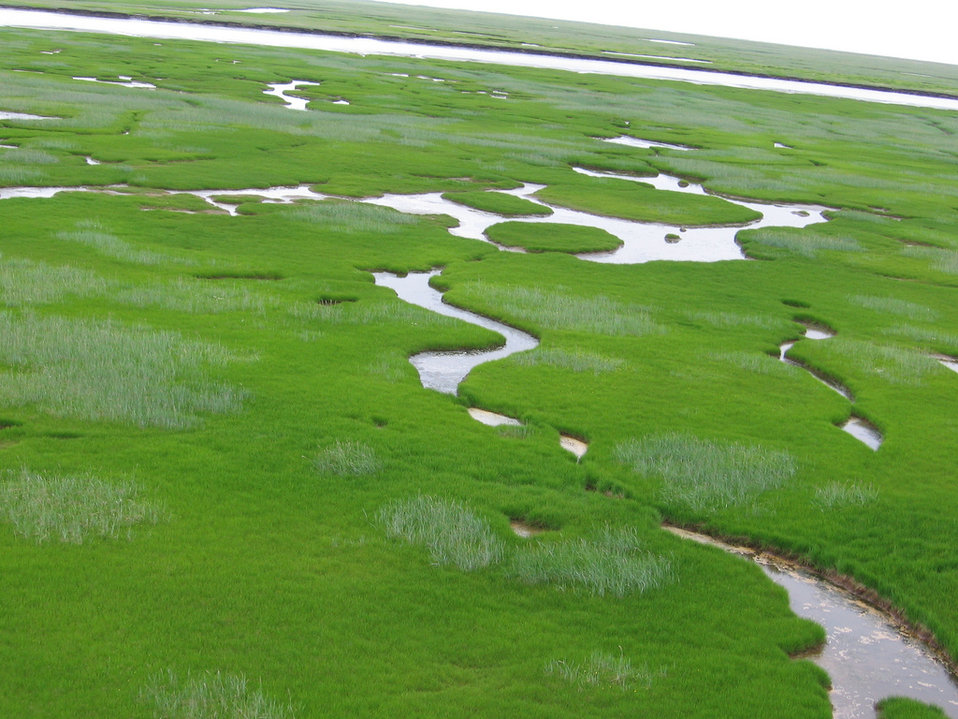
coastal sedge meadow

Yukon Delta National Wildlife Refuge, AK